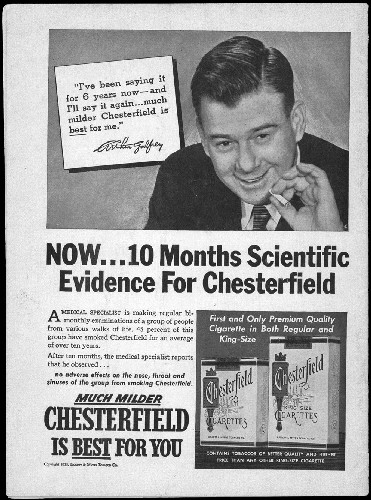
Chesterfield cigarette advertisement on back of 1953 Metropolitan Opera program